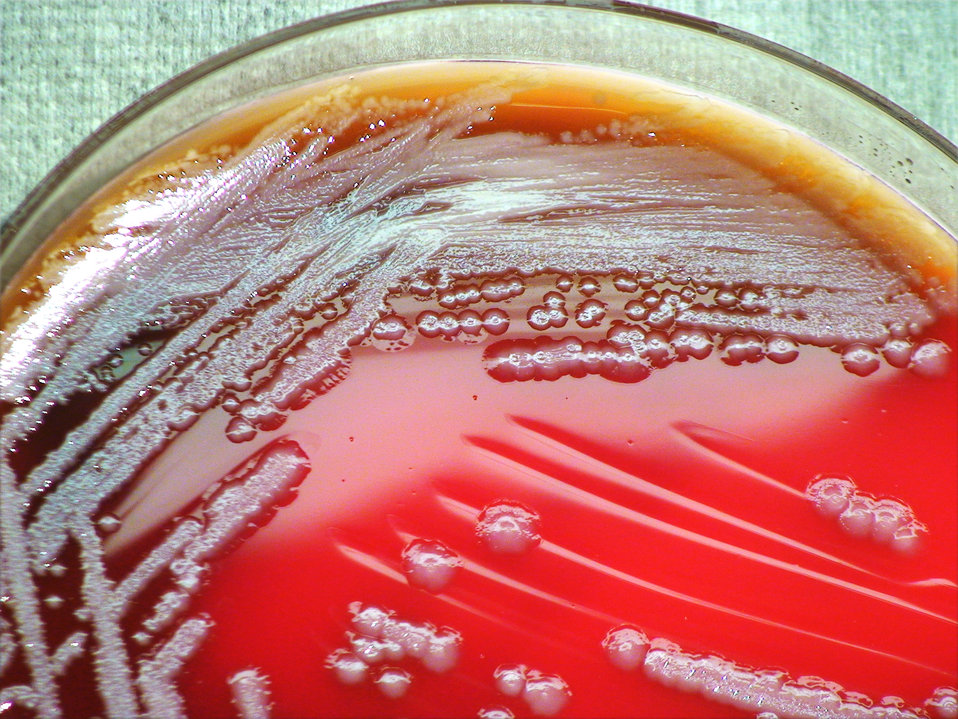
A closer view of PHIL 12408, this photograph depicts the colonial morphology displayed by Gram-negative Burkholderia thailandensis bacteria, which was grown on a medium of sheep's blood agar (SBA), for a 48 hour time period, at a temperature of 42�C. Also, see both PHIL 12401 and 12402, for views of this bacterial specie, grown on the same medium, for the same amount of time, however, at a lesser temperature of 37�C. PHIL 12423 and 12424 display B. thailandensis colonial growth on the same medium, but at a lesser temperature (37�C), and only half the time (24hr). Finally, PHIL 12431 and 12432 display this specie's bacterial growth, again on SBA, for half the time (24hr), but at the same temperature (42�C).